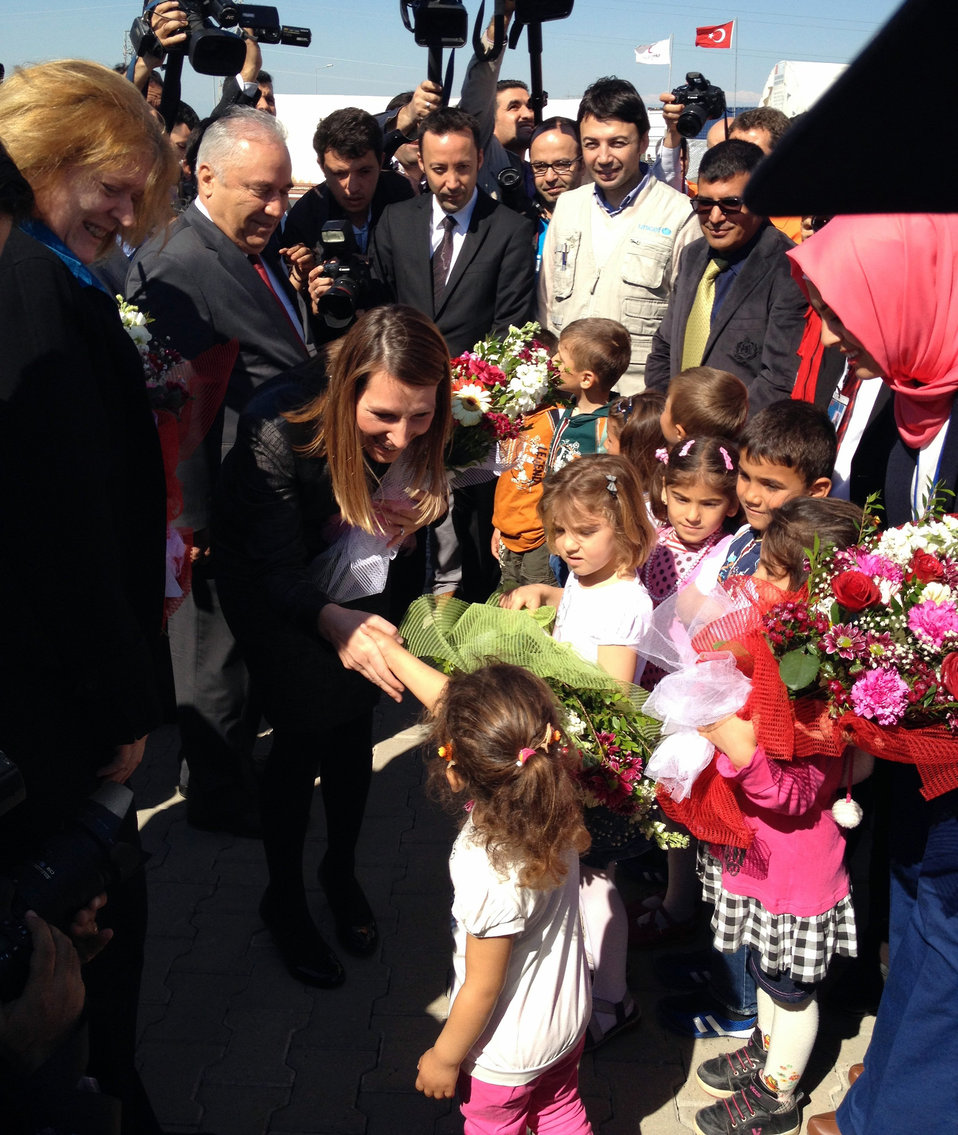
Deputy Secretary Higginbottom and Assistant Secretary Richard Speak With Syrian Refugee Children

Deputy Secretary of State for Management and Resources Heather Higginbottom and Assistant Secretary of State for Population, Refugees, and Migration Anne Richard speak with Syrian refugee children at the Syrian Refugee Camp outside of Adana, Turkey, on March 21, 2014.